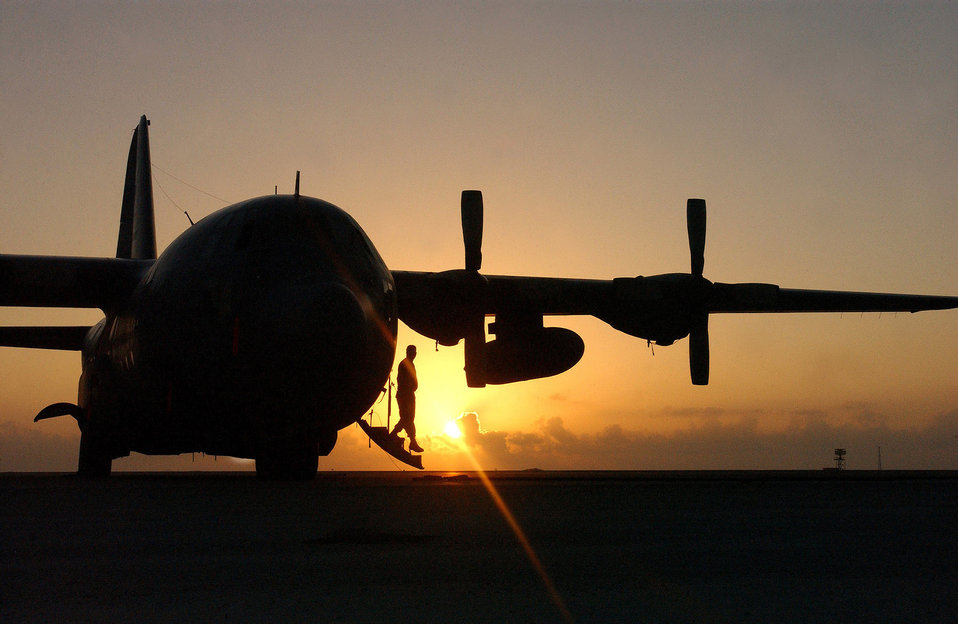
Daybreak

OPERATION IRAQI FREEDOM -- Tech. Sgt. Rich Loyek, 321st Expeditionary Maintenance Squadron crew chief, emerges from a C-130 Hercules after conducting a pre-flight inspection. Loyek is deployed from the 913th Air Reserve Station, Willow Grove, Pa.